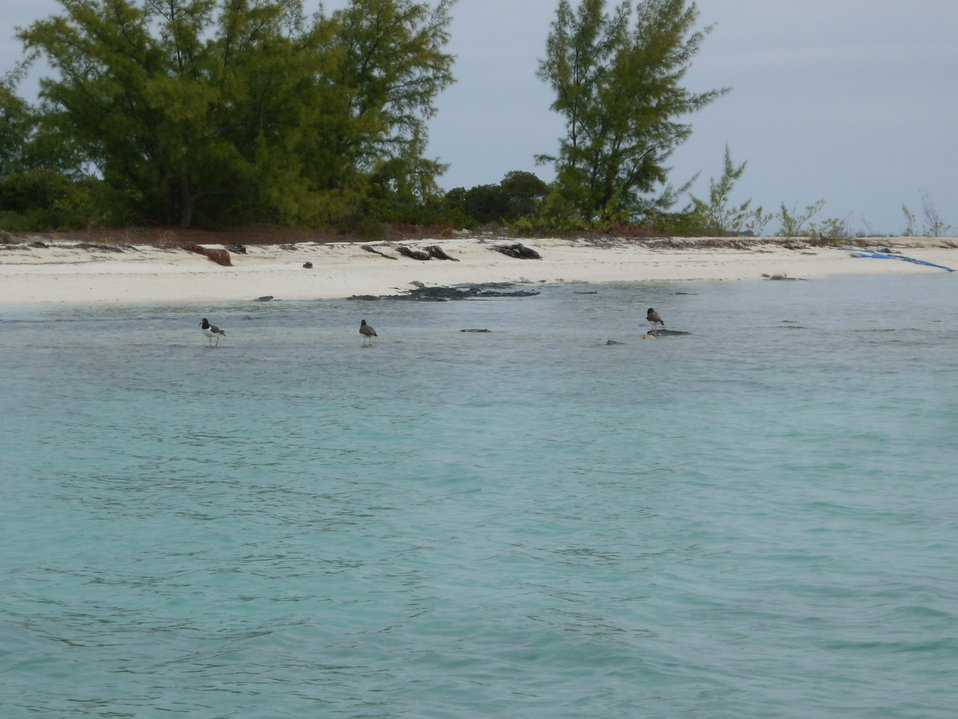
American Oystercatchers (2 adults, 1 juvenile)

On Berry Islands